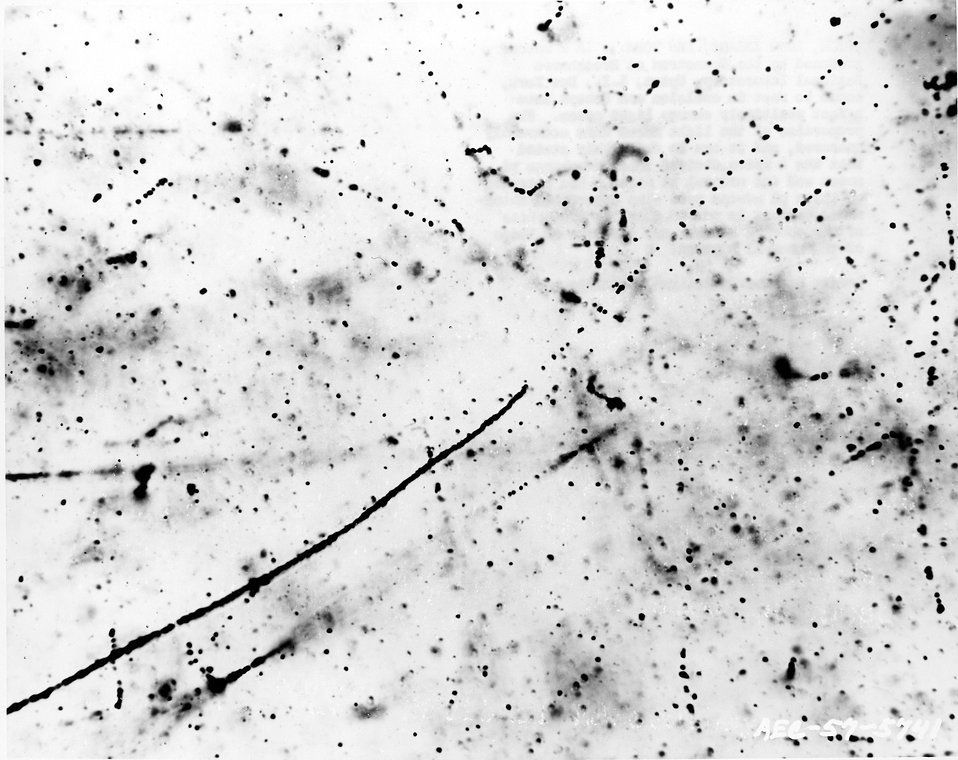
A k meson produced by the Cosmotron at Brookhaven National Laboratory, Upton, L.I., New York, comes to rest in emulsion and decays into a fast positively charge light meson. c. 1957